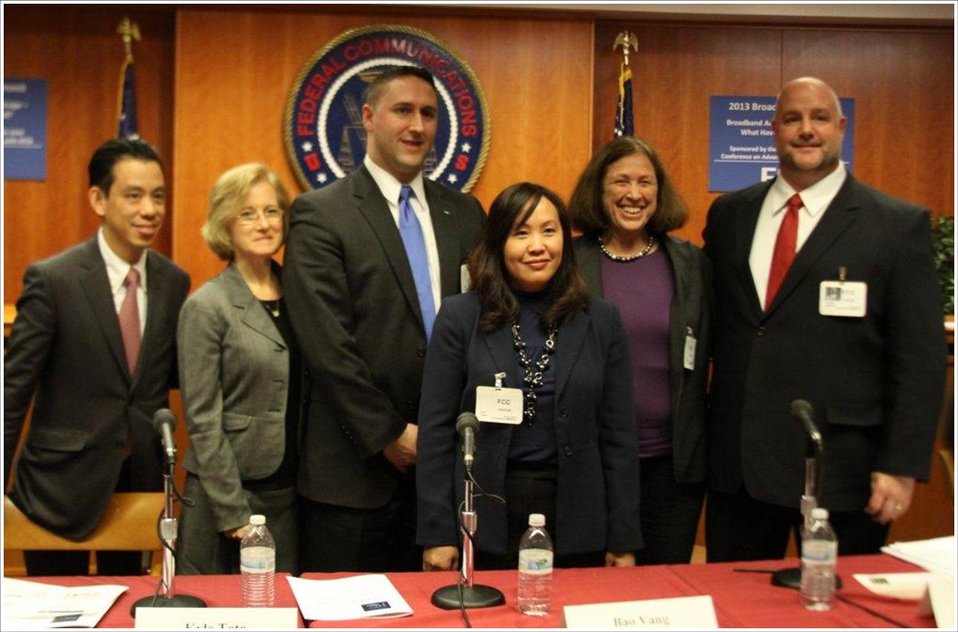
Commissioner Geoffrey Why (MA), Moderator, Deb Socia, Kyle Toto, Bao Vang, Sybil Boutilier, and Derrick Bulawa

Panel 2: Discussion of Best Practices Learned from Implementing
Broadband Adoption Programs Within Different Communities